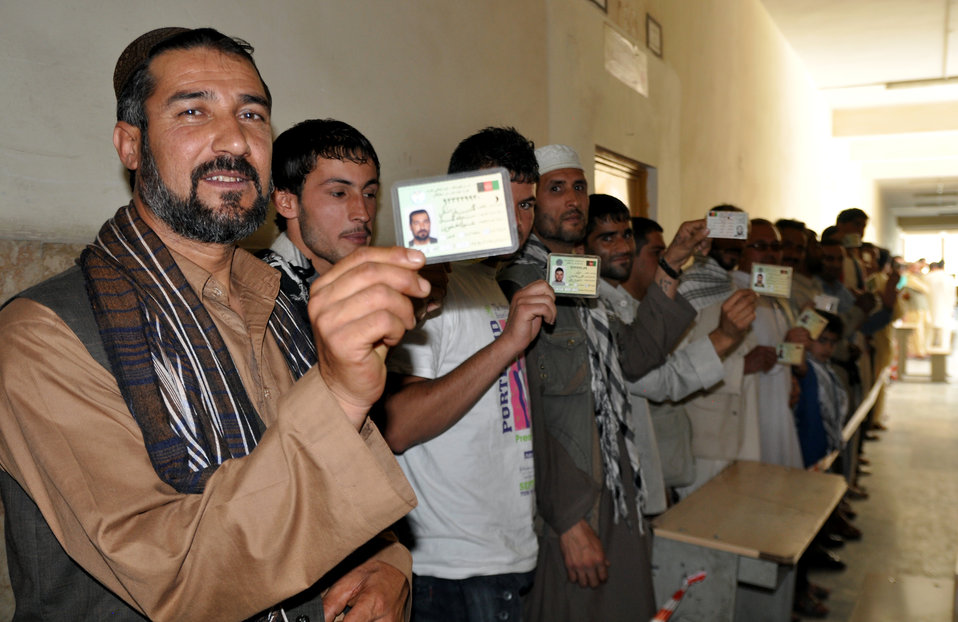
Voters display their voting cards in front of a polling center in Kabul.